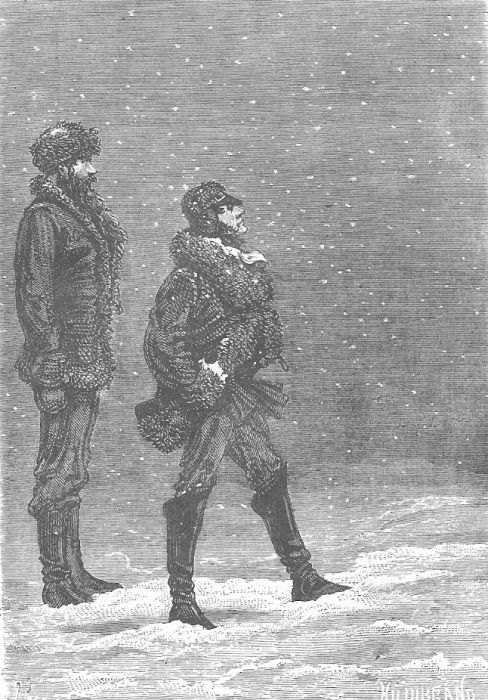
An illustration from Jules Verne's novel 'The Fur Country' (1871-72) drawn by Jules-Descartes Férat or Alfred Quesnay de Beaurepaire. Polski: Ilustracja powieści Juliusza Verne'a 'Wyspa błądząca' (także: 'W krainie białych niedźwiedzi', przekł. dosł.: 'Kraina futer'; 1871-72) autorstwa Julesa-Descartesa Férata lub Alfreda Quesnaya de Beaurepaire'a. Français : Jules Verne: 'Le Pays des fourrures' (1871-72), dessins par Jules-Descartes Férat ou Alfred Quesnay de Beaurepaire. Orginal description from the book: Français : Le lieutenant Jasper Hobson.